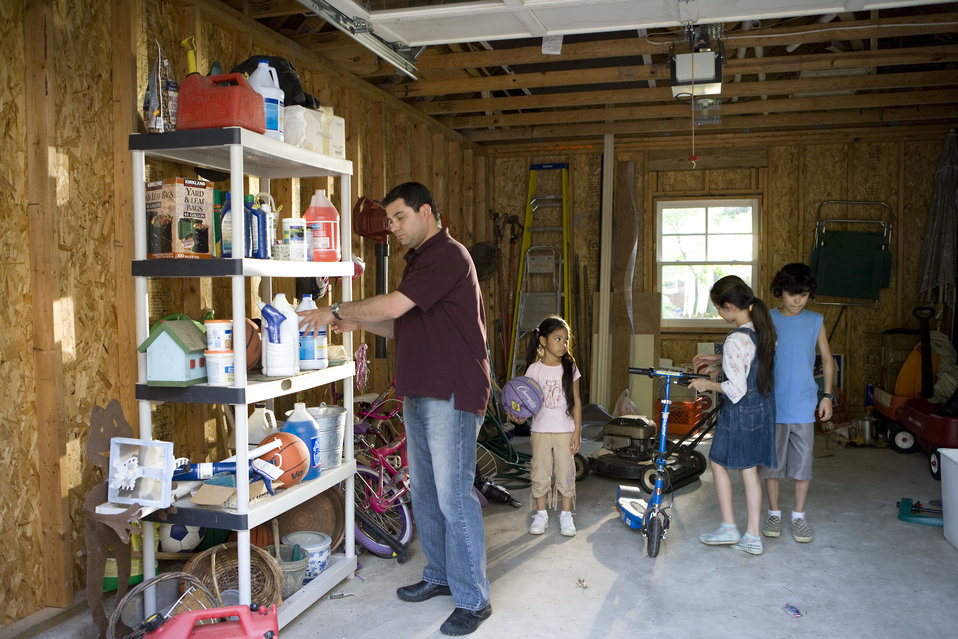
Here we see a father organizing his garage contents, while his children entertained themselves with some of the playthings stored inside.